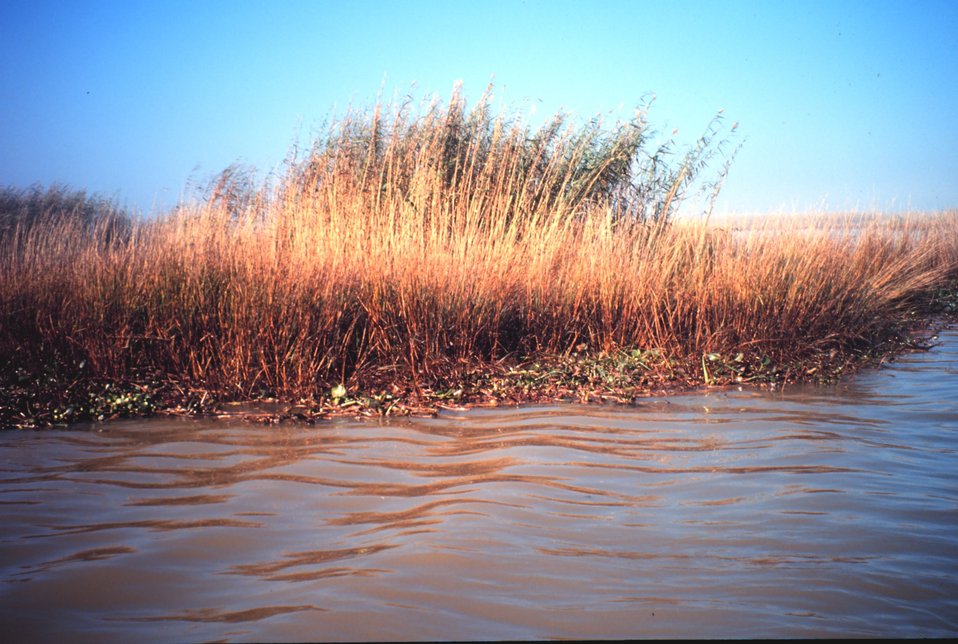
Oiled Spartina following oil spill